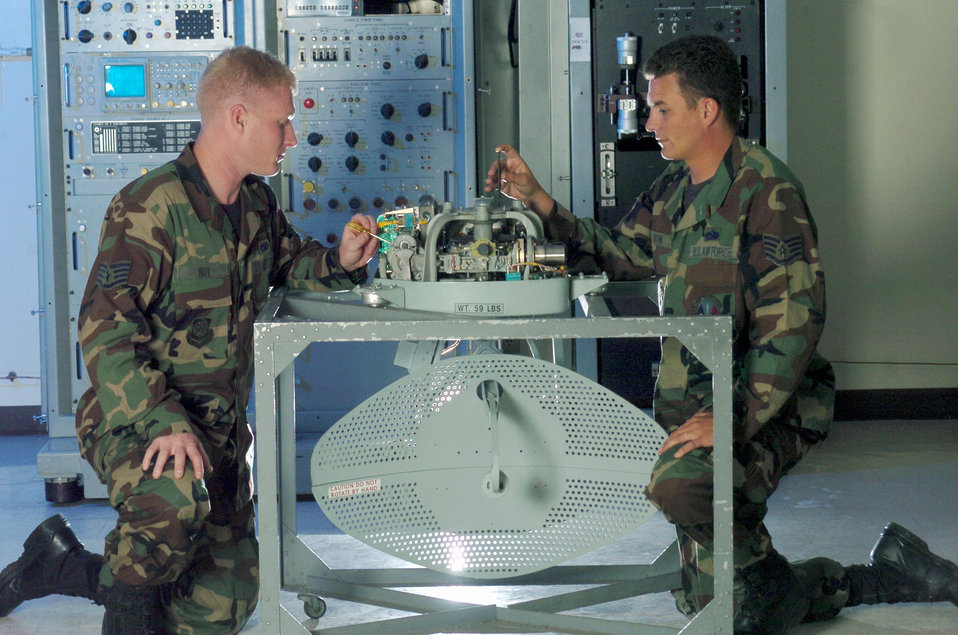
Kadena special ops maintainers team up on tiny troubles

KADENA AIR BASE, Japan -- Staff Sgts. Ehren Wahl (left) and Wesley Brown adjust an antenna. The 353rd Maintenance Squadron Airmen provide maintenance for all MC-130 Combat Talons and Combat Shadows assigned to the 353rd Special Operations Group. The sergeants are communications navigation mission systems technicians.